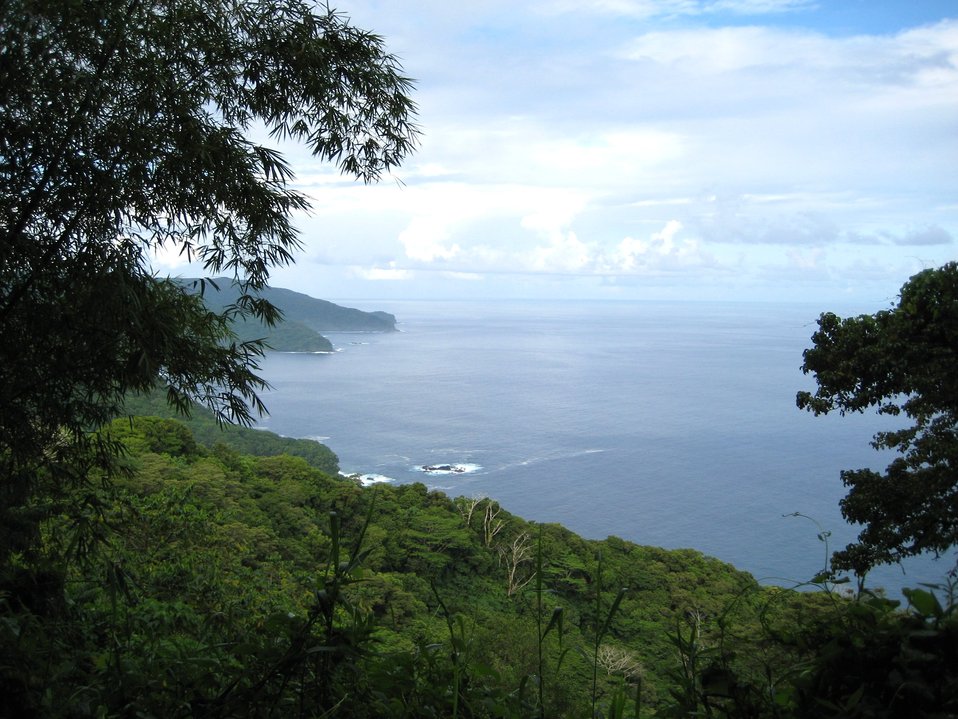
A view along the Samoan coast